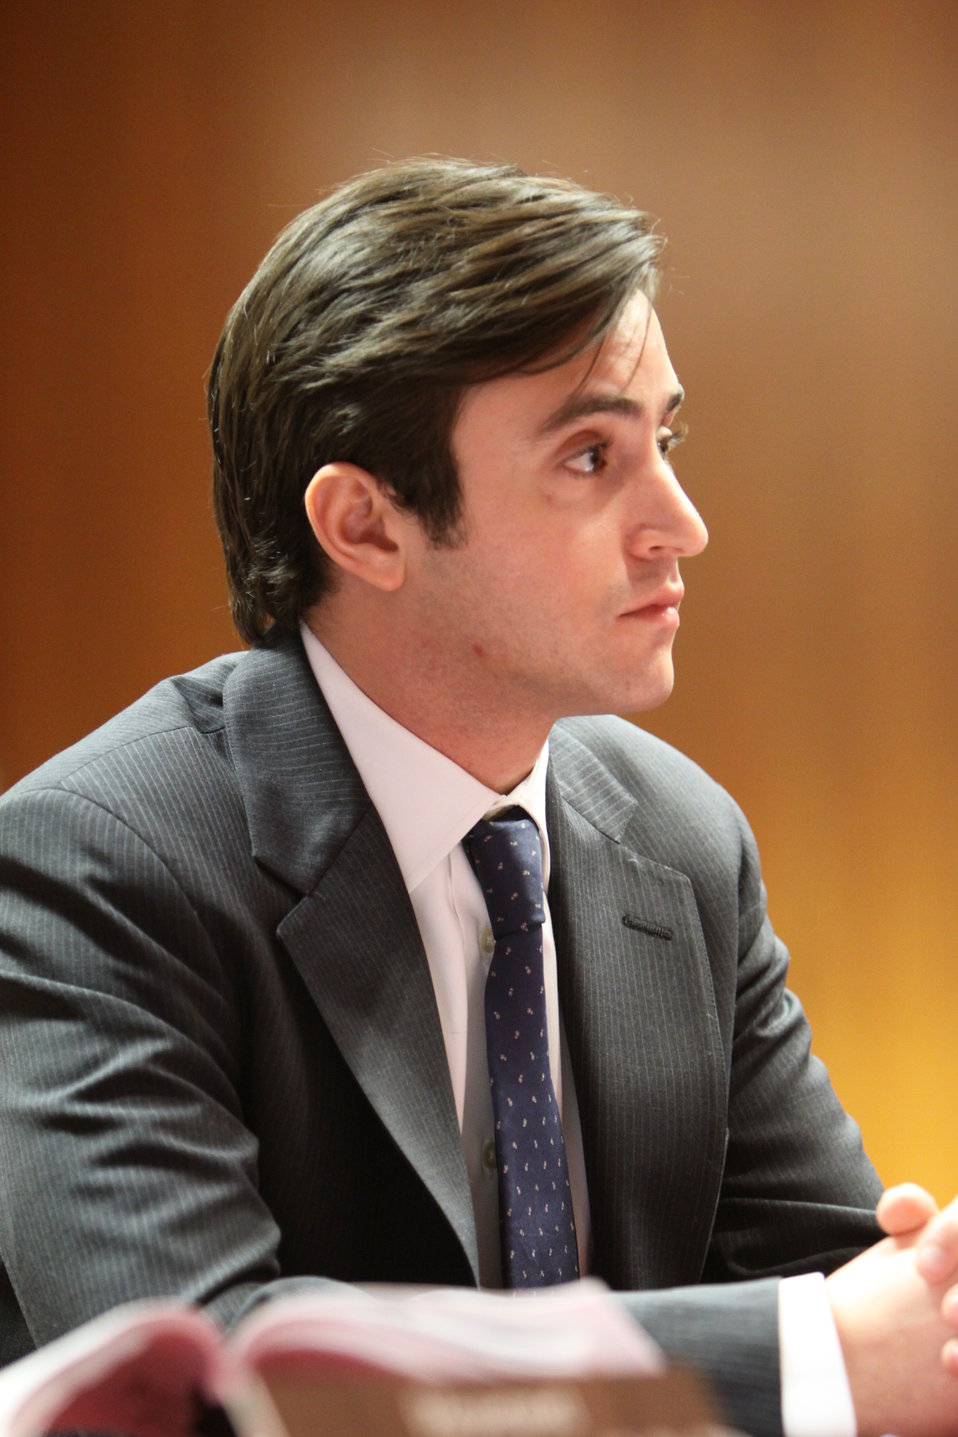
Daniel Ornstein, Special Assistant to the Chairman